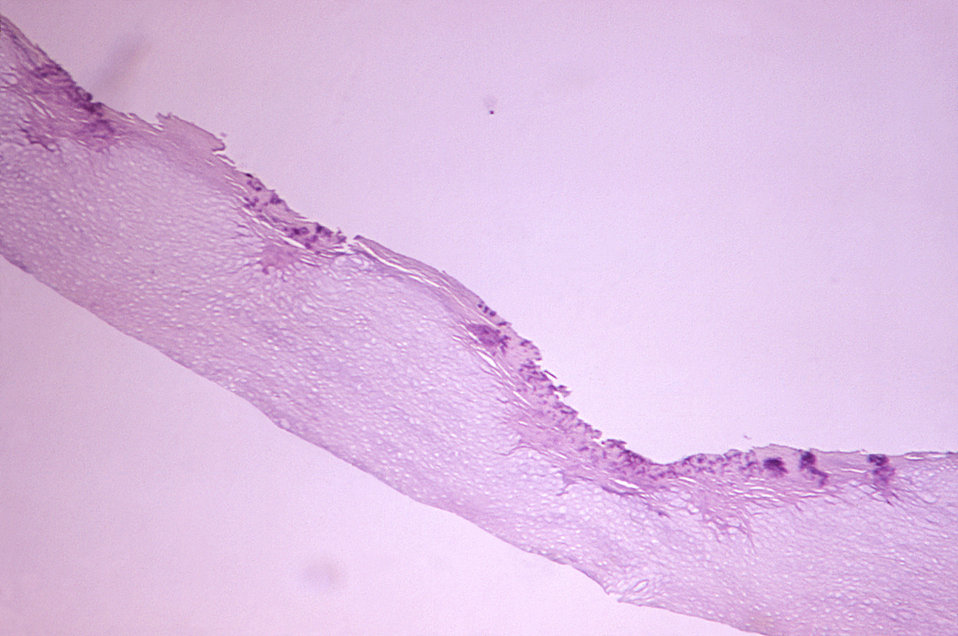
Using a PAS staining technique, this photomicrograph of a skin sample from the sole of a patient's foot, revealed histopathologic signs indicatine of Pitted Keratolysis due to a Gram-positive Dermatophilus sp. bacterial infection.